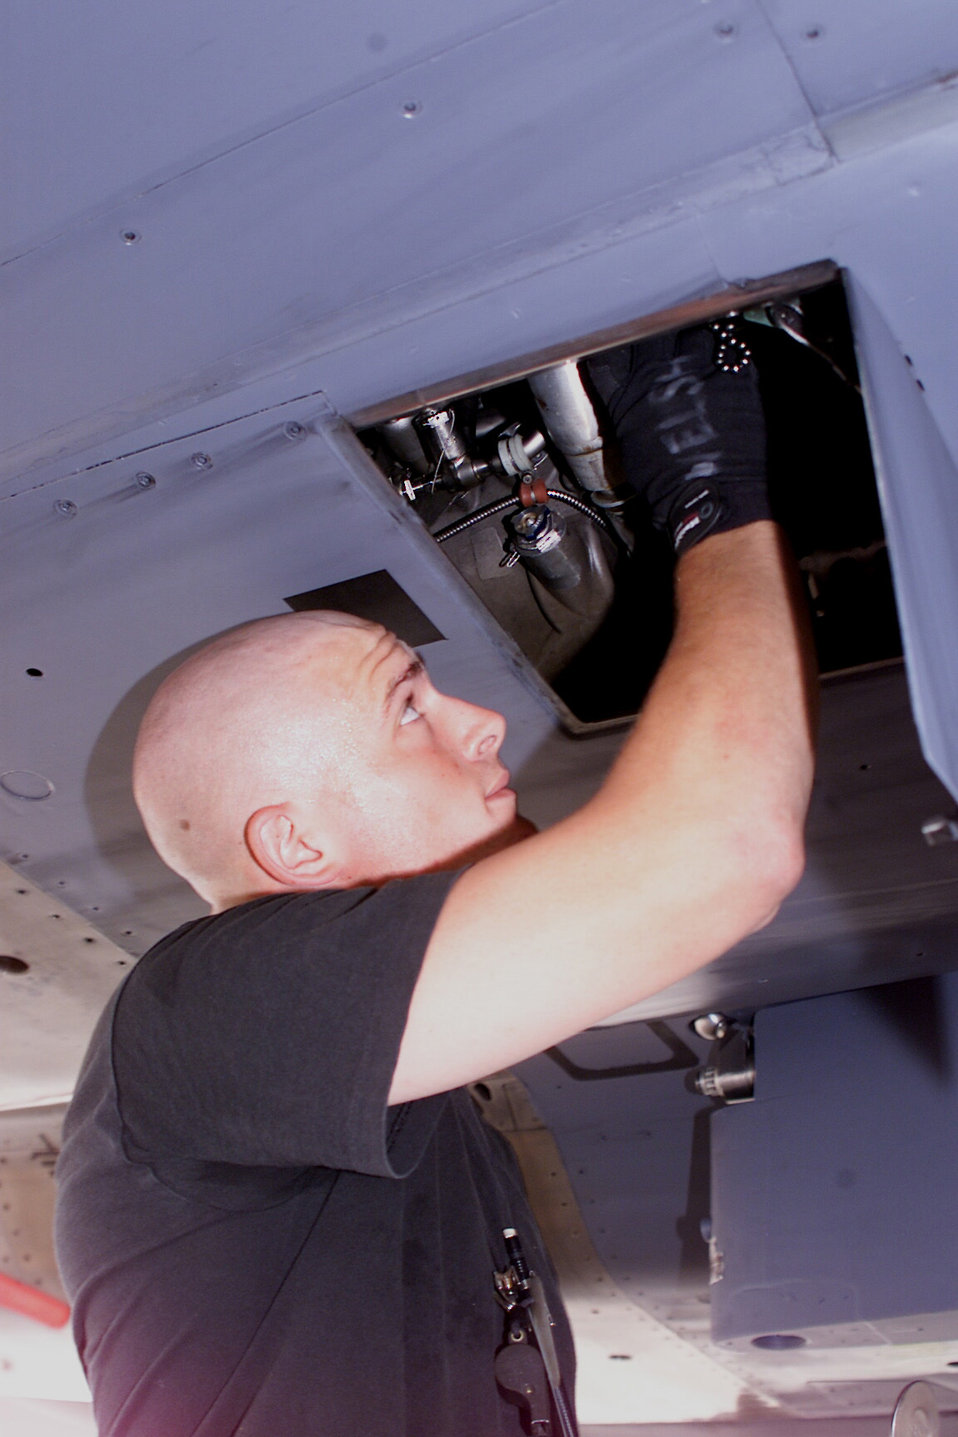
First arrivals

GWANGJU AIR BASE, South Korea -- Senior Airman Jacob Welsh checks the engine oil of an F-15E Strike Eagle here Sept. 1. Airman Welsh is deployed from the 90th Aircraft Maintenance Unit at Elmendorf Air Force Base, Alaska.